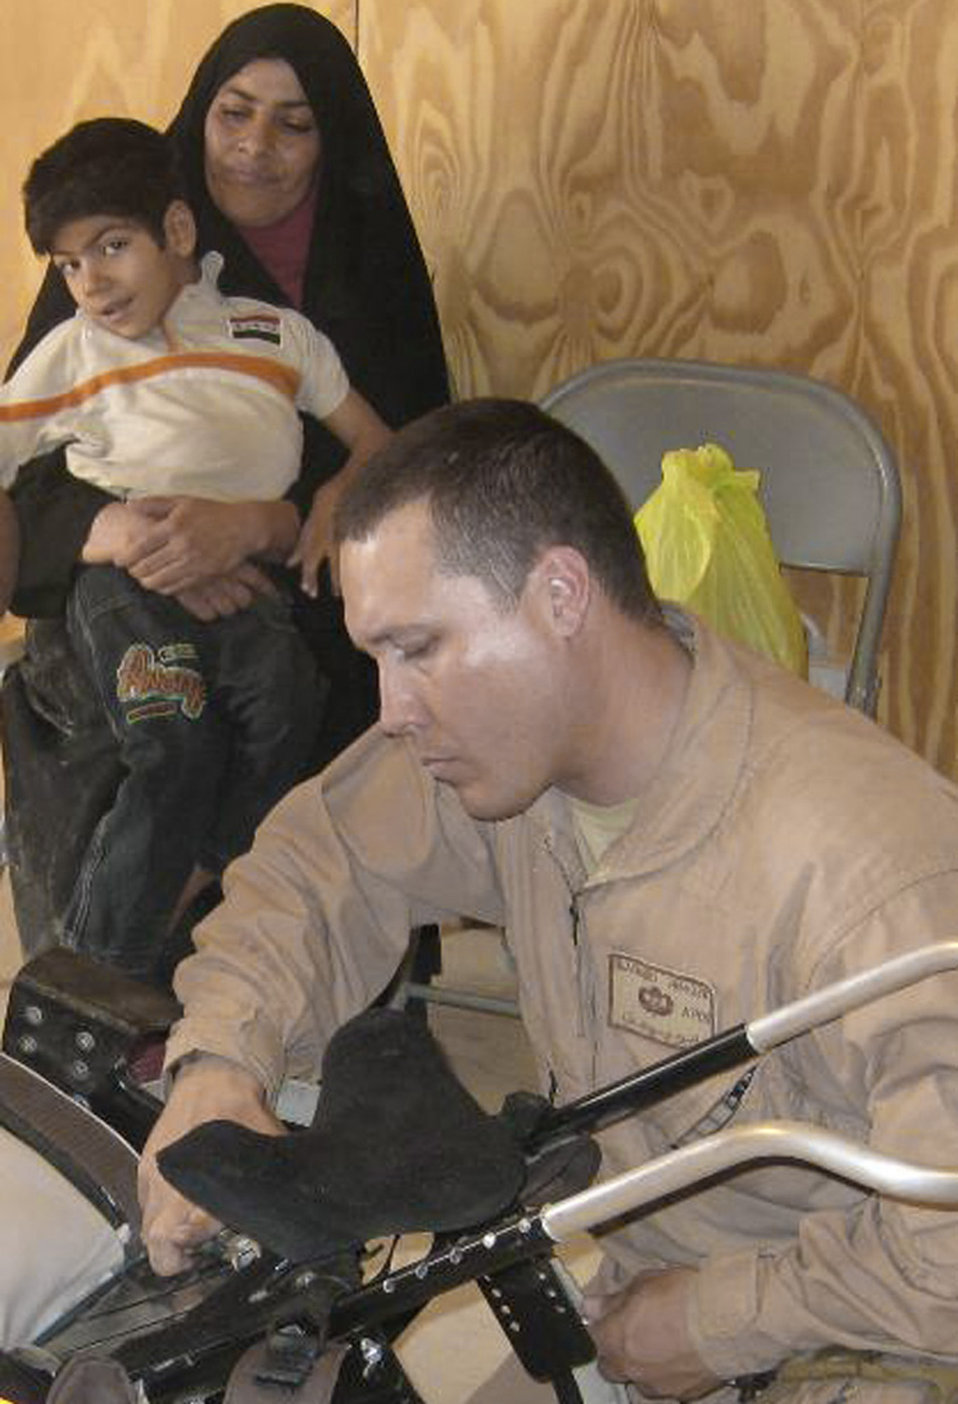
Colorado reservists help get wheelchairs to needy Iraqi children

In this undated photo, an Airman helps custom fit a pediatric wheelchair for an Iraqi child. A C-130 Hercules aircrew from the Air Force Reserve's 302nd Airlift Wing, Peterson Air Force Base, Colo., flew wheelchairs like this one to Andrews AFB, Md., where another plane took the wheelchairs to Baghdad, Iraq.